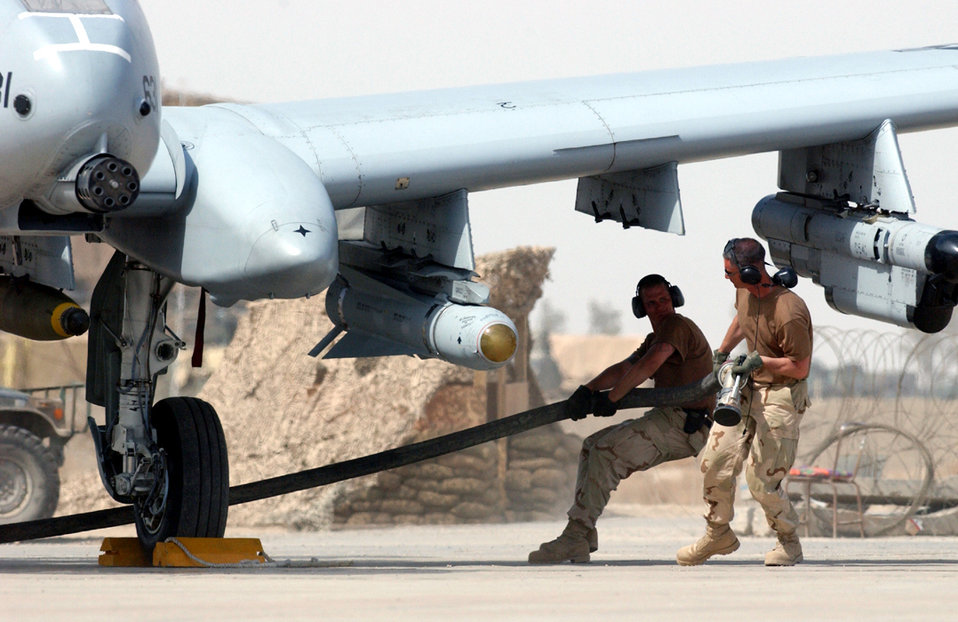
Thunderbolt fuel

OPERATION IRAQI FREEDOM -- Tech. Sgt. Dan Janssen (left) and Fuel Distribution Supervisor Master Sgt. Kevin Bossaller Crew Chief, drag a hose to refuel an A-10 Thunderbolt II. This was the first A-10